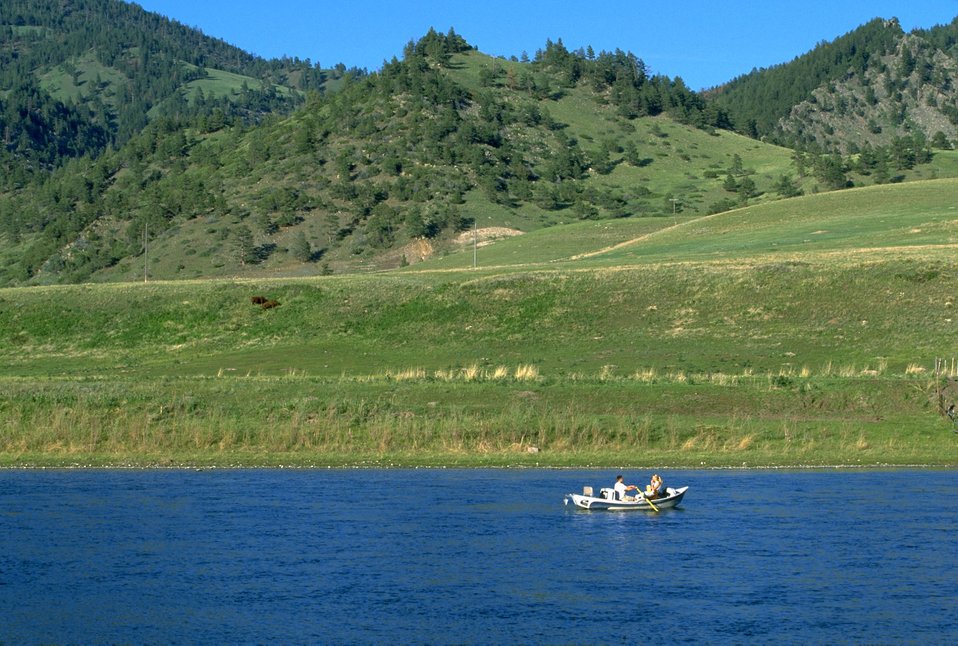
Boating on the Missouri River